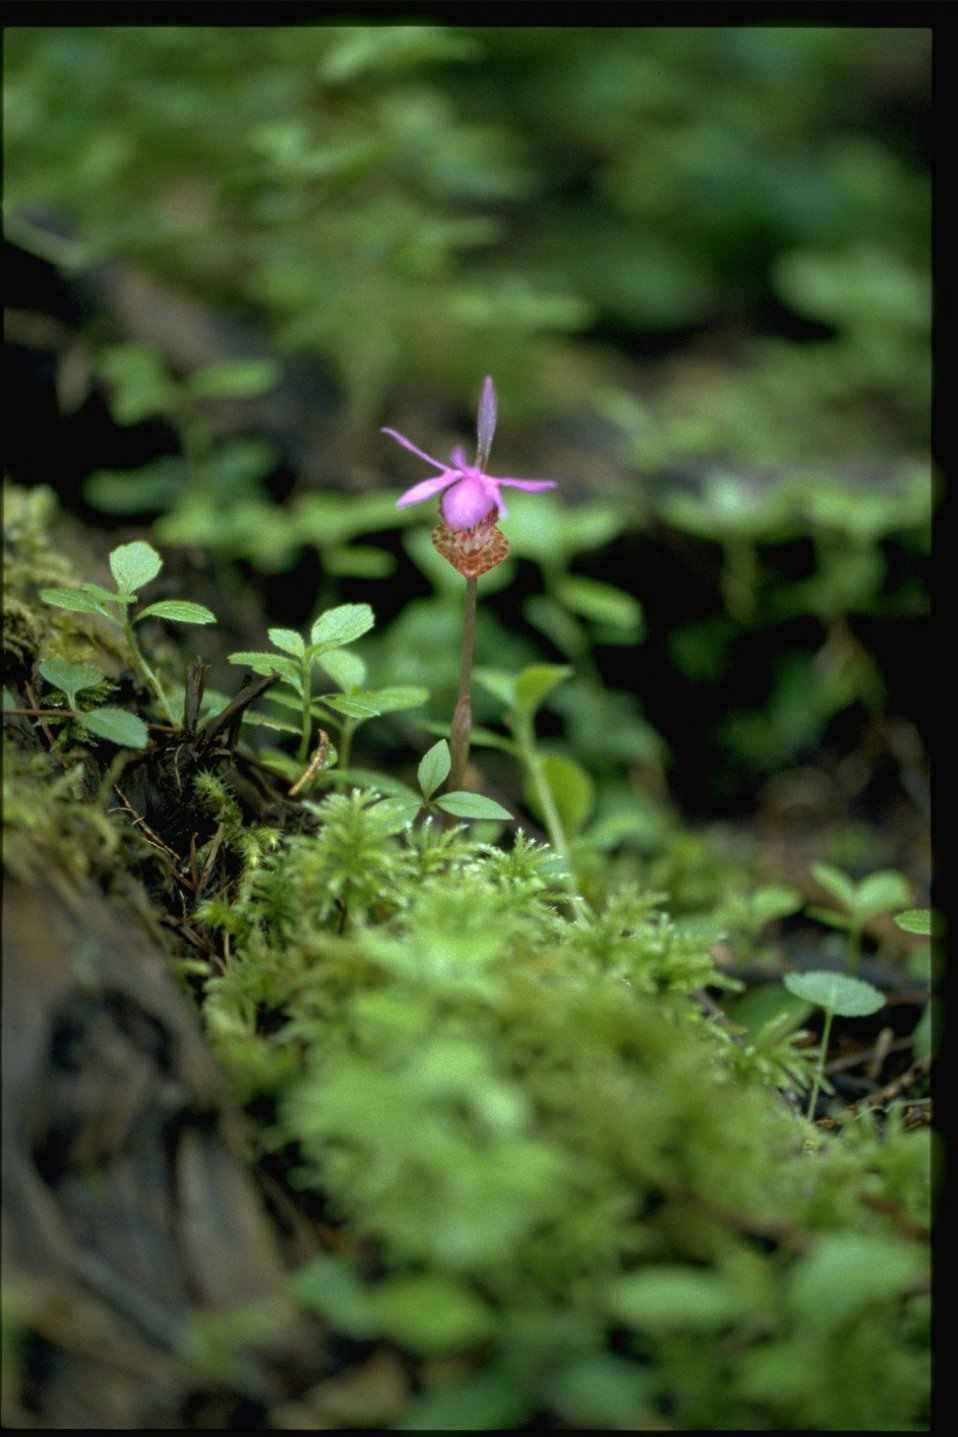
Farshot of Calypso bulbosa.